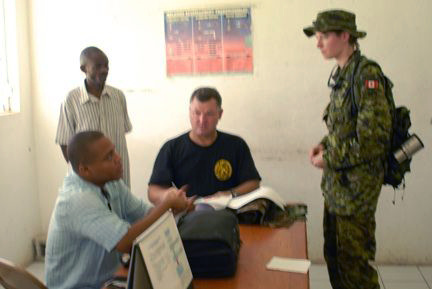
This image captured in the municipality of Ennery, Haiti, September 22, 2008, depicts U.S. Public Service (USPHS) Lt. Cmdr. Gary Brunette, and Canadian Army Capt. Gillian Batt (standing on right), participating in discussions with Haitian health officials inside a local medical clinic. Lt. Cmdr. Brunette and Capt. Batt had both embarked on this humanitarian effort aboard the USS Kearsarge (LHD 3).